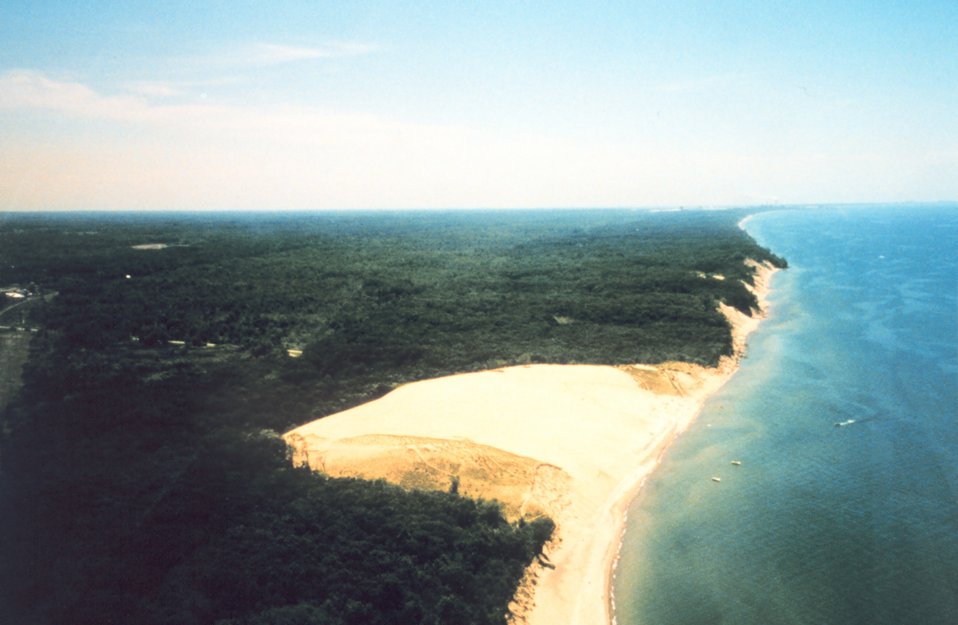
Looking west along the south shore of Lake Michigan